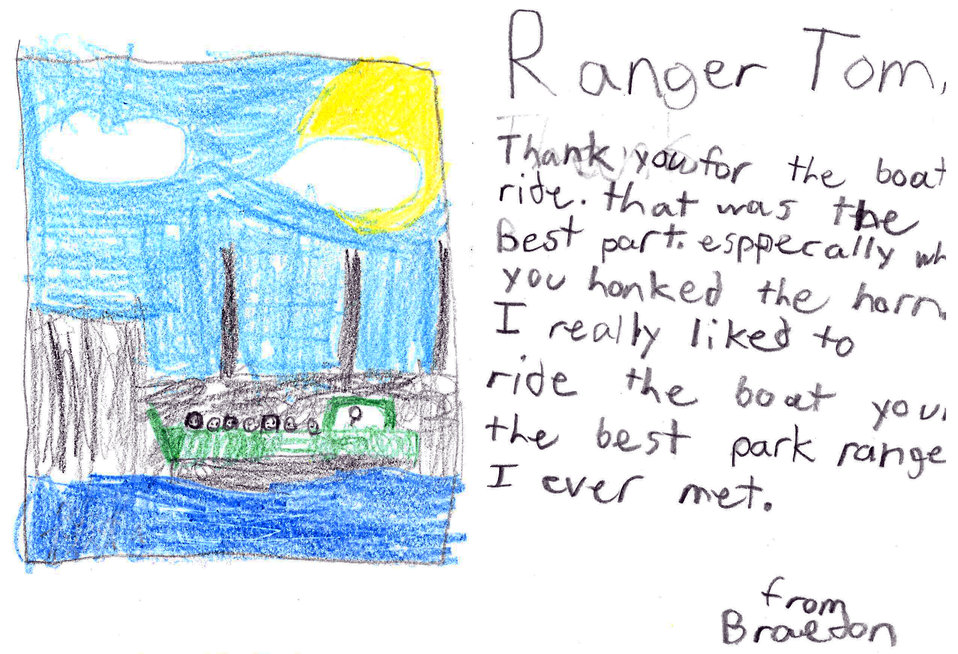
A boat ride with the ranger

If day-to-day burdens have caused you to forget the simple joys of nature, consider this delightful cure: thank-you notes written by elementary school students to park rangers in the U.S Army Corps of Engineers Sacramento District.

A boat ride with the ranger is nice, but add in a horn honk and -- wow!